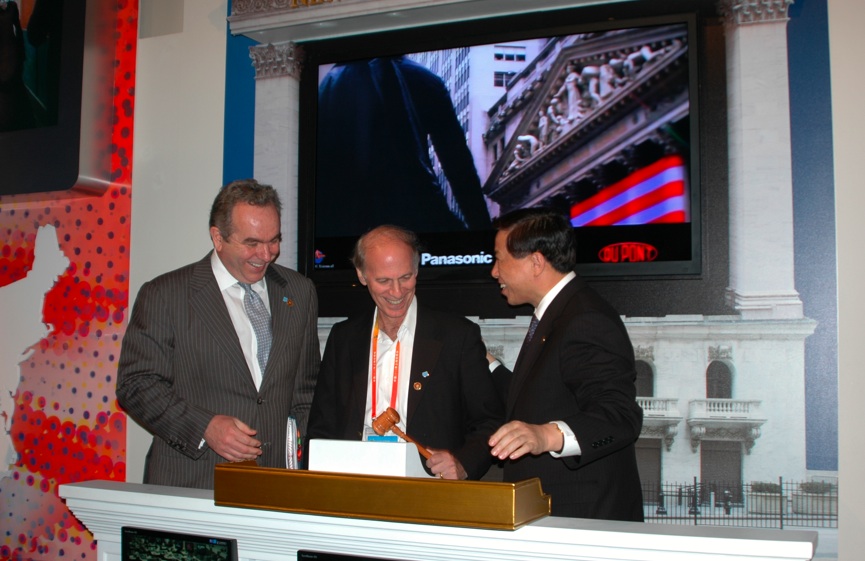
Assistant Secretary Campbell Takes His Turn at NYSE

Assistant Secretary of State for East Asian and Pacific Affairs Kurt Campbell takes his turn at the New York Stock Exchange Display at the USA Pavilion, part of the 2010 World Expo in Shanghai, China, May 22, 2010.